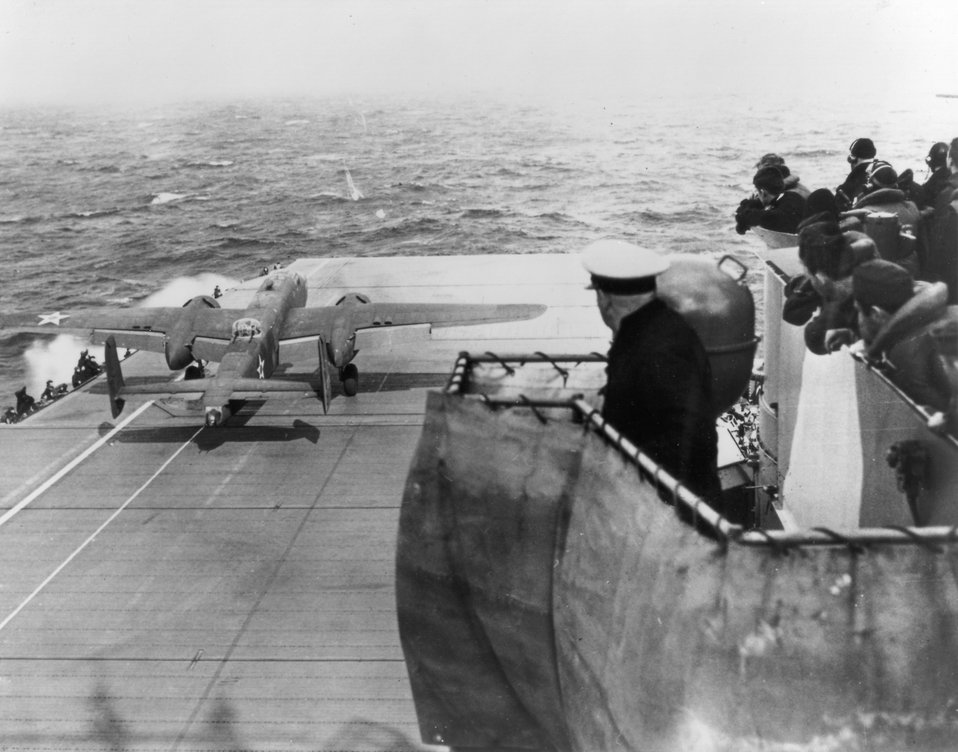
B-25 takes off from an aircraft carrier

1940's -- B-25 about to take off from an aircraft carrier somewhere in the Pacific Ocean.